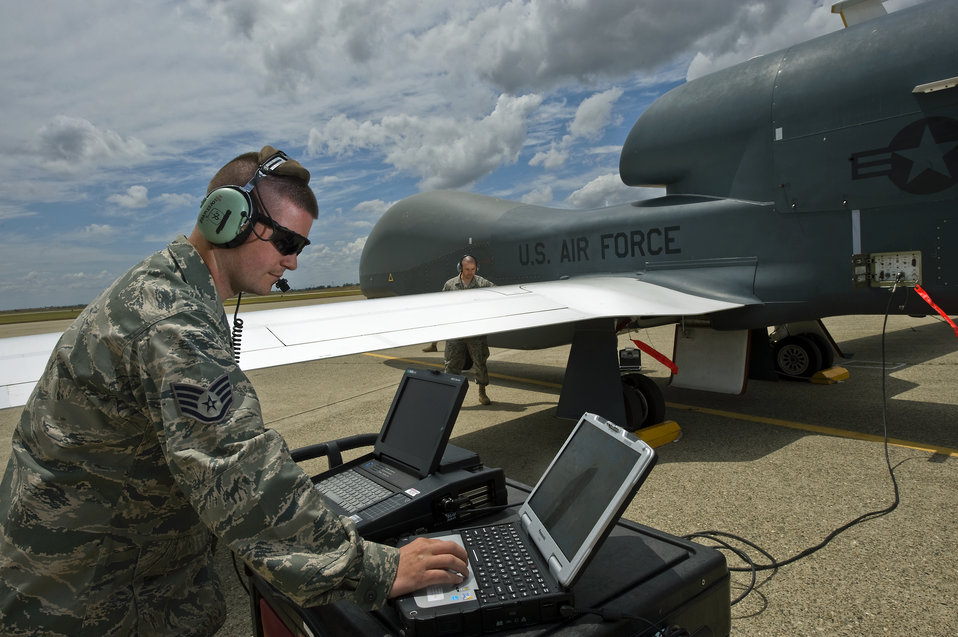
Global Hawk takes northern route, improves efficiency

Staff Sgt. Ryan Conversi prepares the RQ-4 Global Hawk for launch using the vehicle test controller while reviewing technical orders May 26, 2010, at Beale Air Force Base, Calif. Sergeant Conversi is a crew chief assigned to the 12th Reconnaissance Squadron.